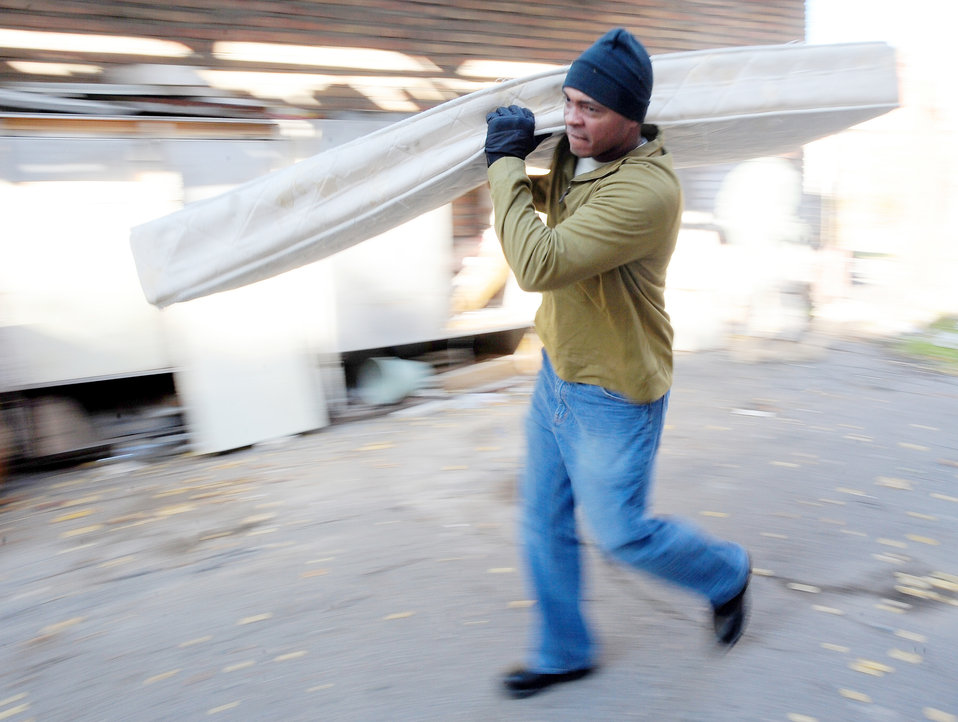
Manas Airmen donate necessities to hospital, school in Kyrgyzstan

Master Sgt. Hubert Buchanan carries a mattress at the Bishkek Center for Mental Health Oct. 31, 2009, at Bishkek, Kyrgyzstan. Airmen stationed at the Transit Center at Manas unloaded 300 mattresses and 240 bed frames, at the hospital, for donation. Sergeant Buchanan is the 376th Expeditionary Aircraft Maintenance Squadron aerospace ground equipment flight chief deployed from Shaw Air Force Base, S.C. He hails from Bramwell, W.Va.